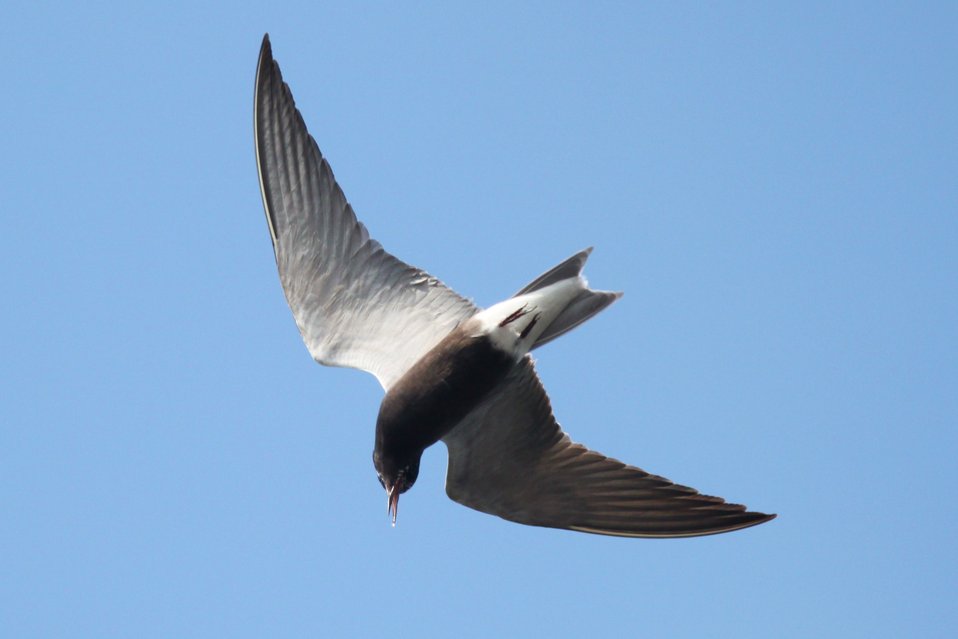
Black Tern flying

Black tern photographed at Missisquoi National Wildlife Refuge